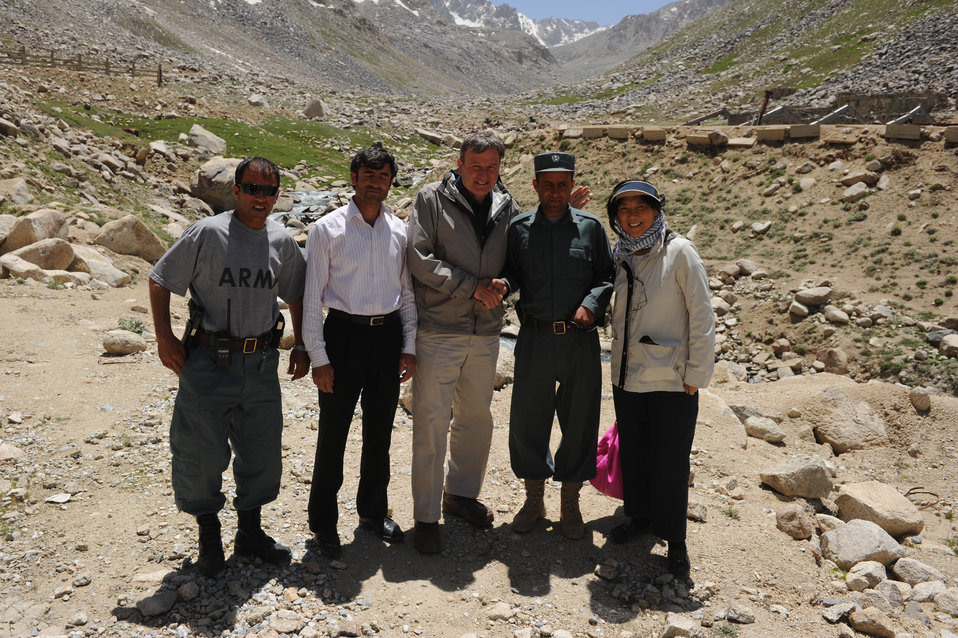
U.S. Ambassador Karl W. Eikenberry and his wife Ching pose with Afghan police near the North end of the Salang Tunnel on the border of Parwan and Baghlan Provinces, Afghanistan, on Wednesday, June 15, 2011. (S.K.Vemmer/Department of State)